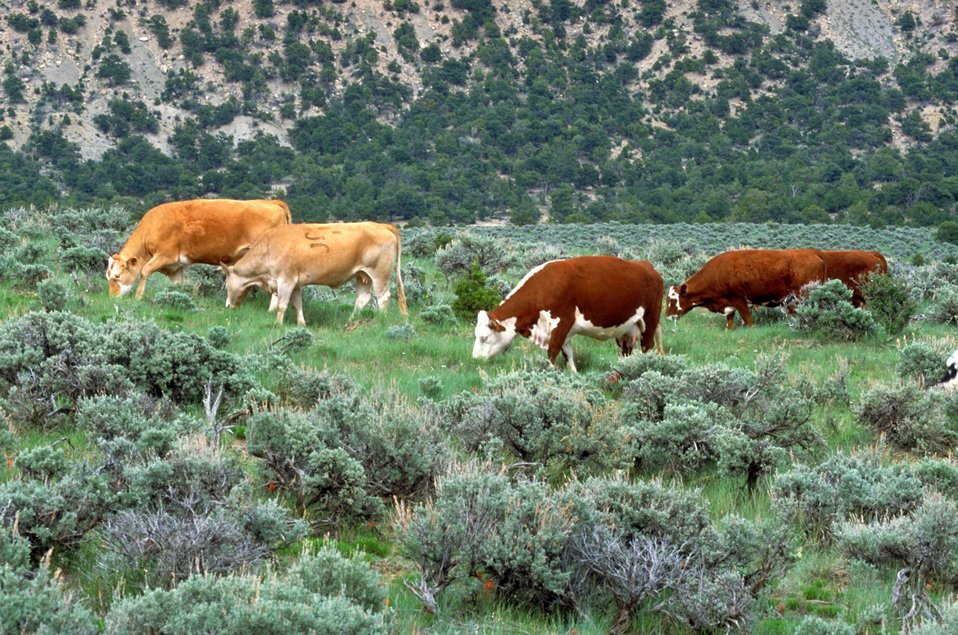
Livestock grazing on BLM lands near Price, Utah.